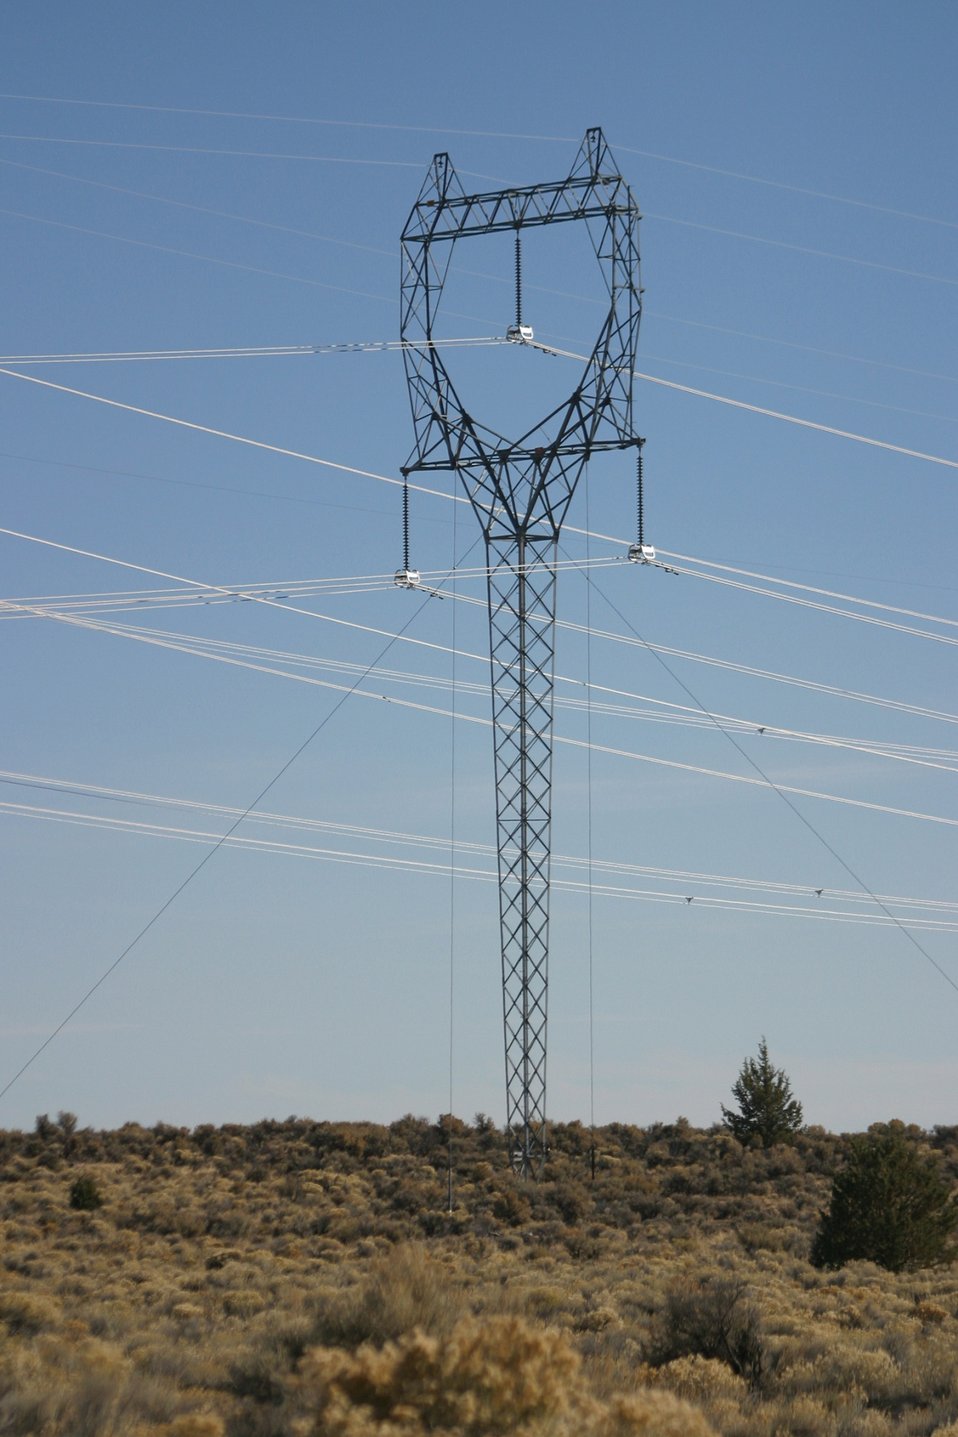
Power tranmission lines rights-of-way cross BLM lands in eastern Oregon.